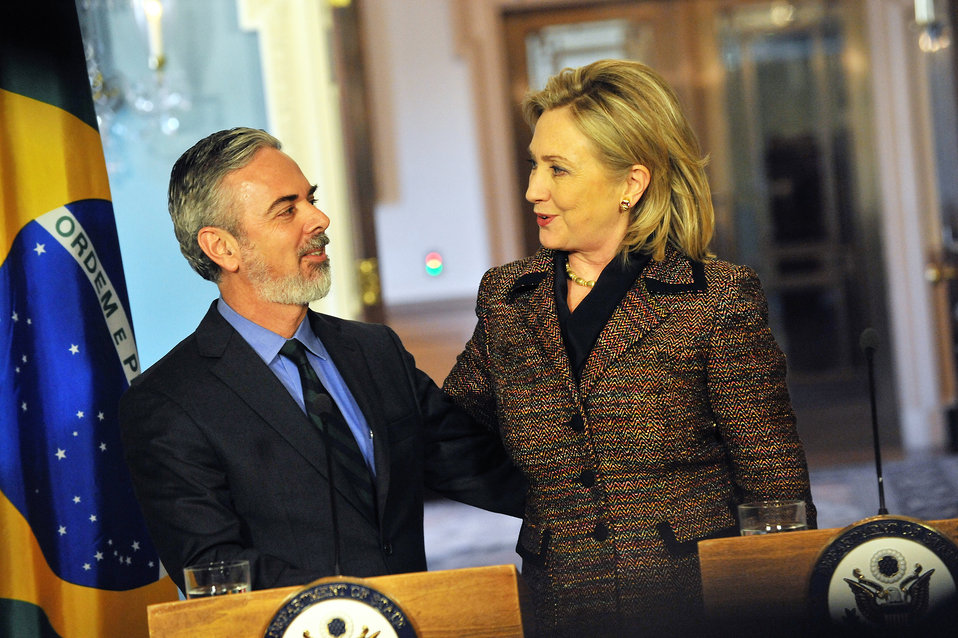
Secretary Clinton Speaks With Brazilian Foreign Minister Patriota

U.S. Secretary of State Hillary Rodham Clinton speaks with Brazilian Foreign Minister Antonio Patriota at the U.S. Department of State in Washington, D.C., on February 23, 2011.